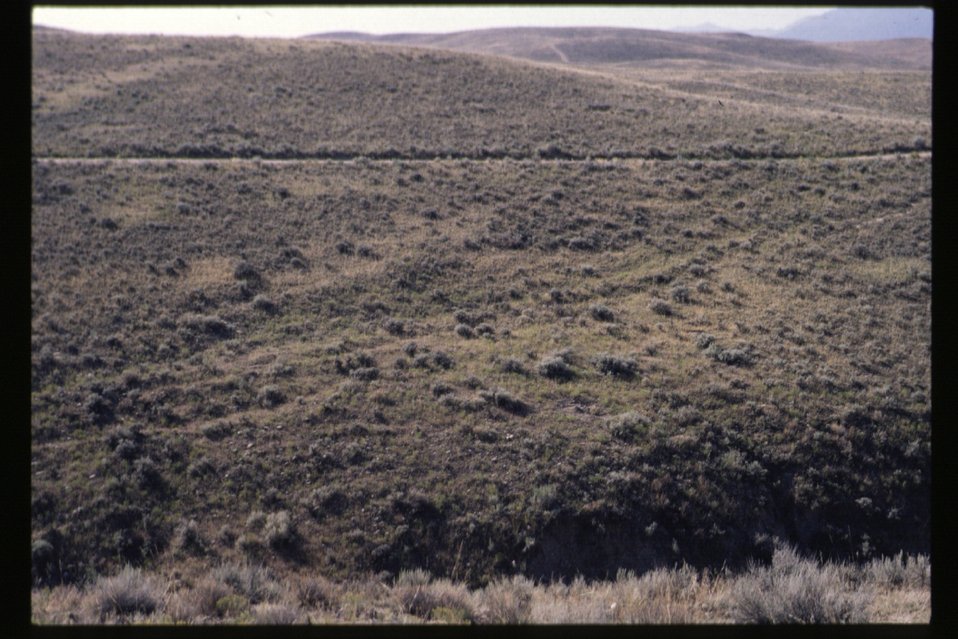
Single Tread Ruts Discovery Hills Lewis and Clark Trail Salmon Field Office UCSC Upper Columbia Salmon Clearwater District